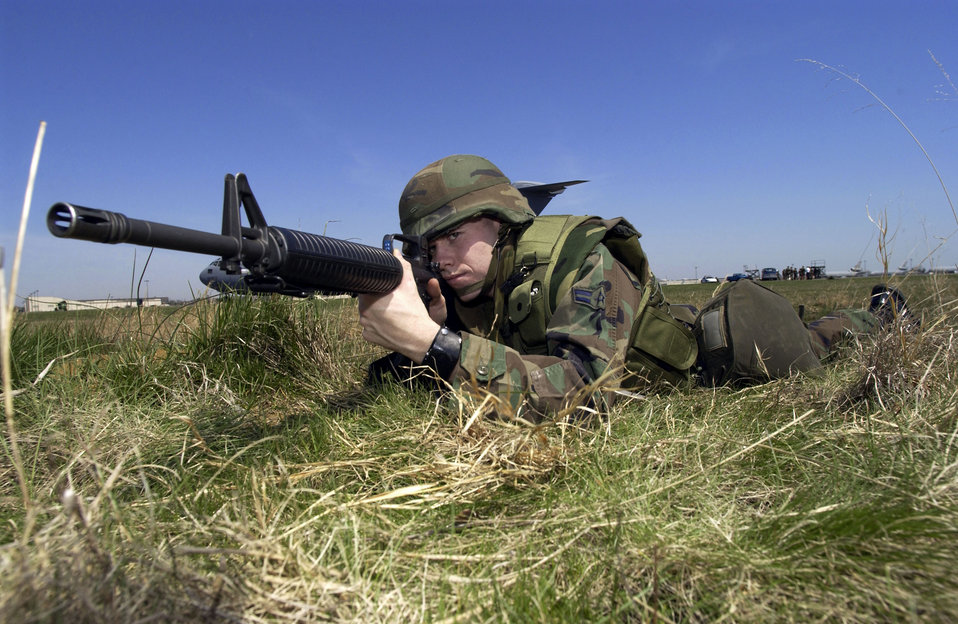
Taking aim

MCGUIRE AIR FORCE BASE, N.J. -- Airman 1st Class Timothy Reed assumes a defensive position around a C-17 Globemaster III during a nuclear surety support exercise April 15. The scenario had a disgruntled crewmember on board seize control of the aircraft and a nuclear weapon and threaten to shoot the crew and explode the weapon.